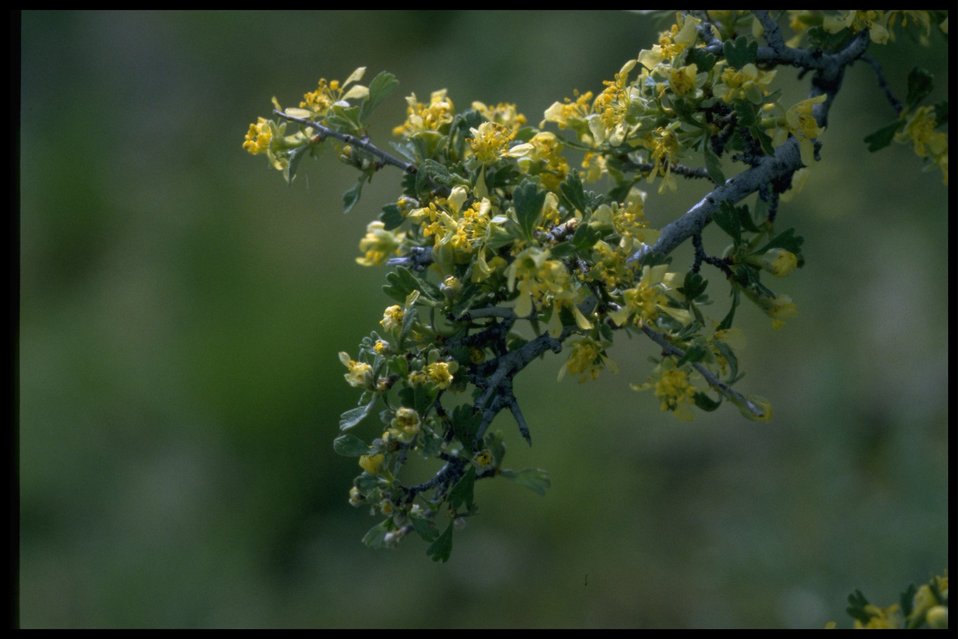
Closeup shot of Bitterbrush flowers.